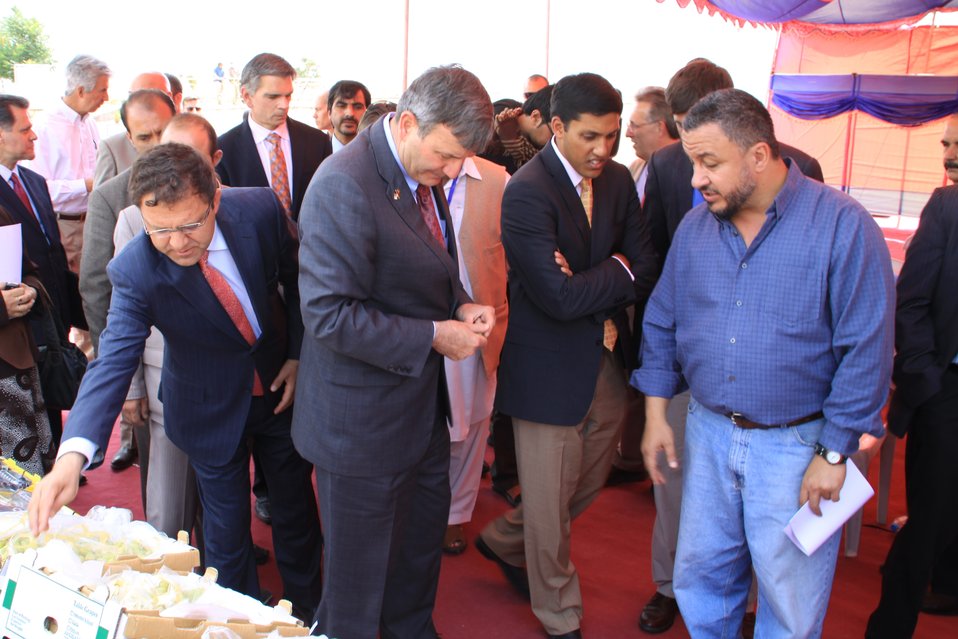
Badam Bagh Farm